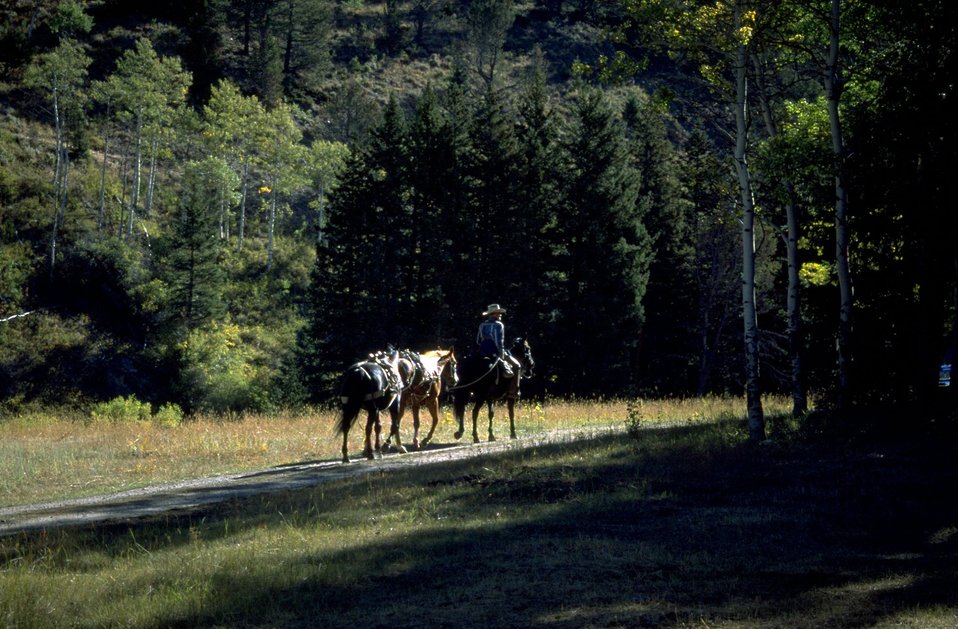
Horse back rider leading pack horses - Aspen in background